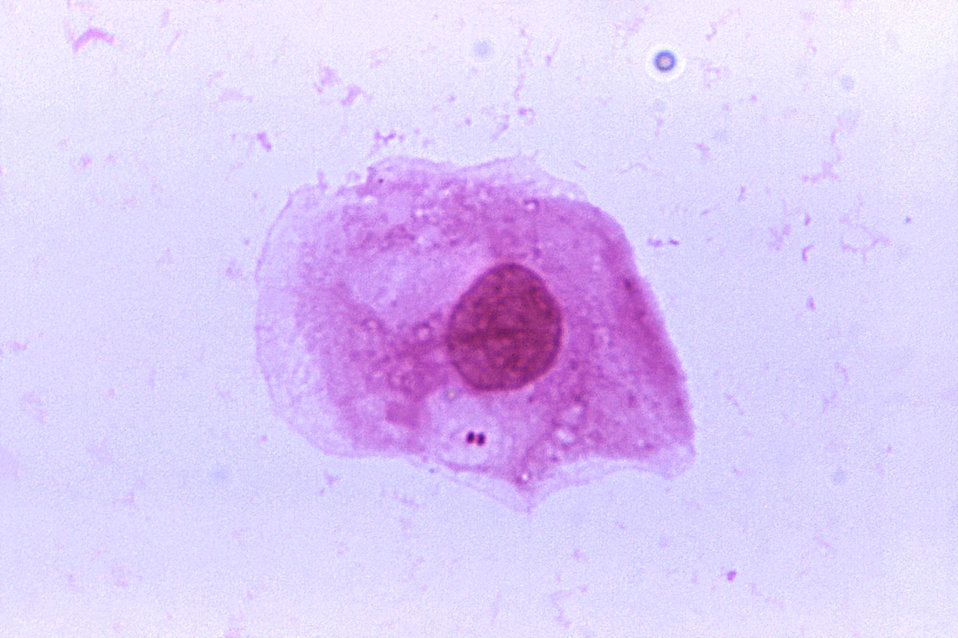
A photomicrograph of Neisseria meningitidis recovered from the urethra of an asymptomatic male; Magnified 1125X.